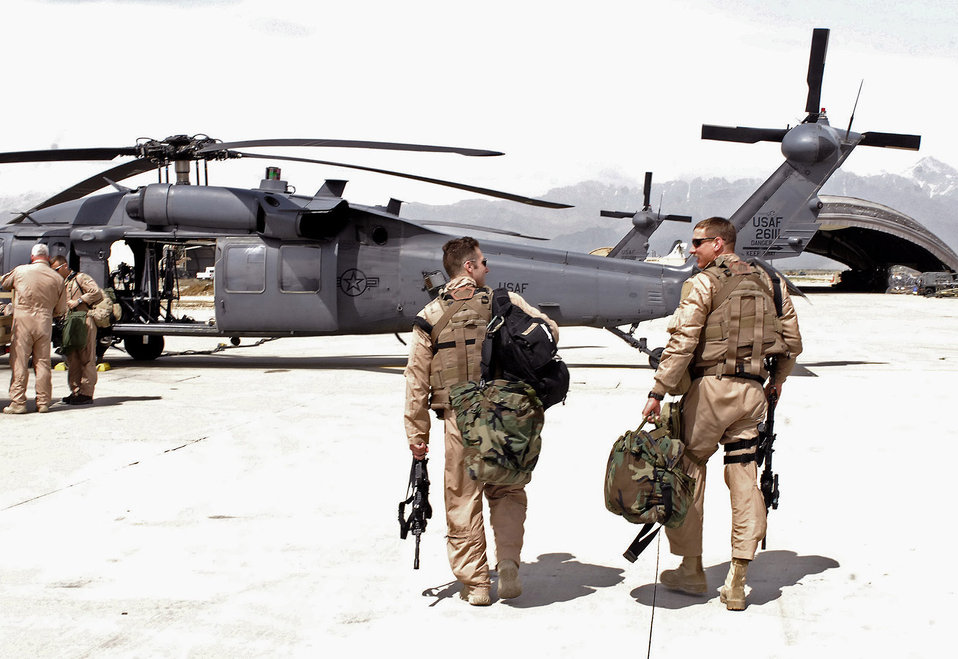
New York Guardsmen stay on alert to save lives

1st Lt. Shaun Cullen and Capt. Robert Felix walk out to an HH-60 Pave Hawk prior to a training mission April 20 at Bagram Airfield, Afghanistan. Lieutenant Cullen is a 101st Expeditionary Rescue Squadron pilot, and Captain Felix is a 492nd Expeditionary Fighter Squadron flight surgeon.